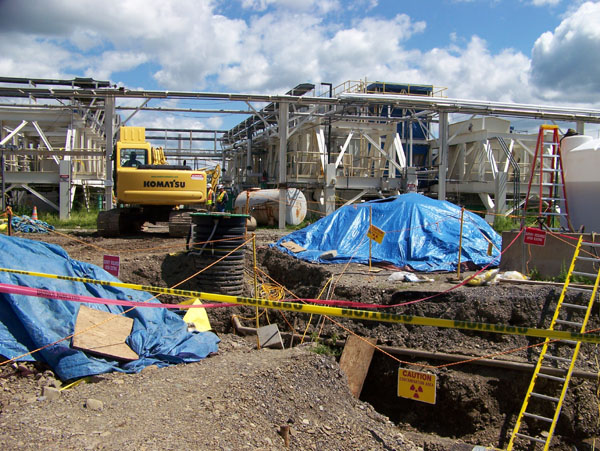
Recovery Act Funds New Equipment to Keep Waste Tanks Dry

With funding from the Recovery Act, workers at the West Valley Demonstration Project (WVDP) are installing a tank and vault drying system to evaporate the remaining liquids in the tanks and vaults, and maintain a low relative humidity to limit tank corrosion.

With an operational design life of 30 years, this system will provide needed time for WVDP officials to make and implement long-term decisions about the decommissioning of the Waste Tank Farm.